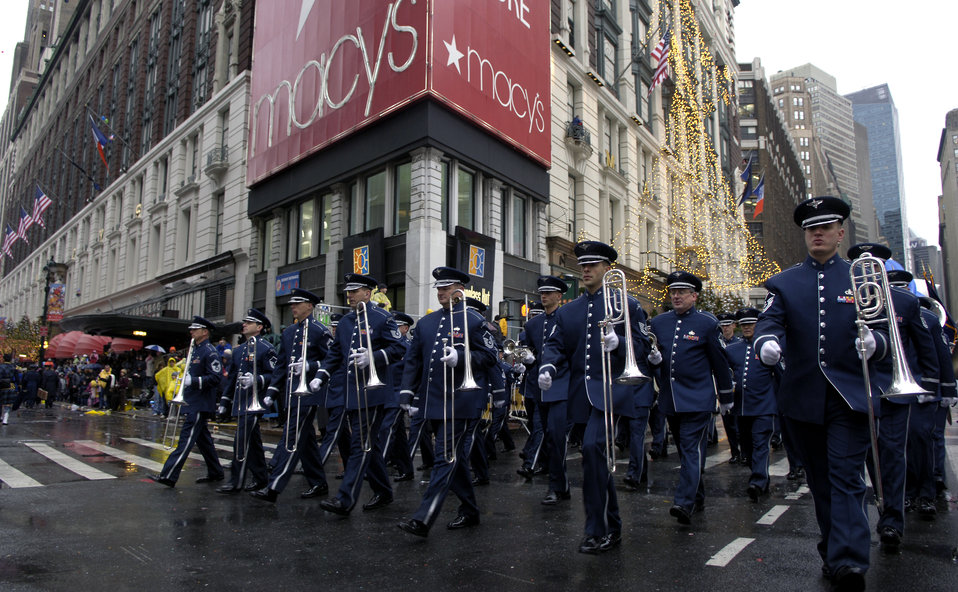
Macy's Thanksgiving Day Parade

The U.S. Air Force Academy Marching Band rounds the corner of Broadway and 34th Street at the 80th Macy's Thanksgiving Day Parade in New York City, N.Y., Nov. 23.